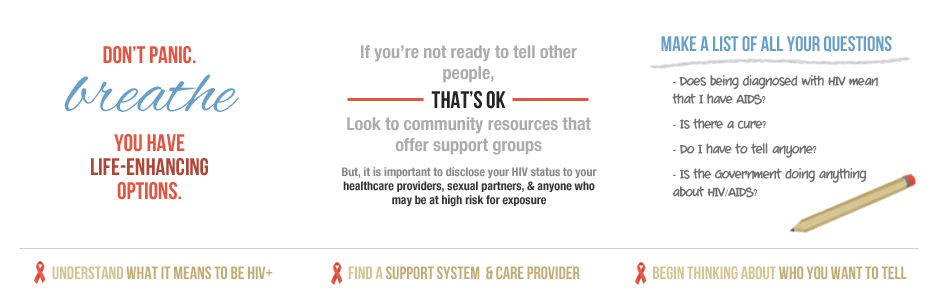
newly diagnosed